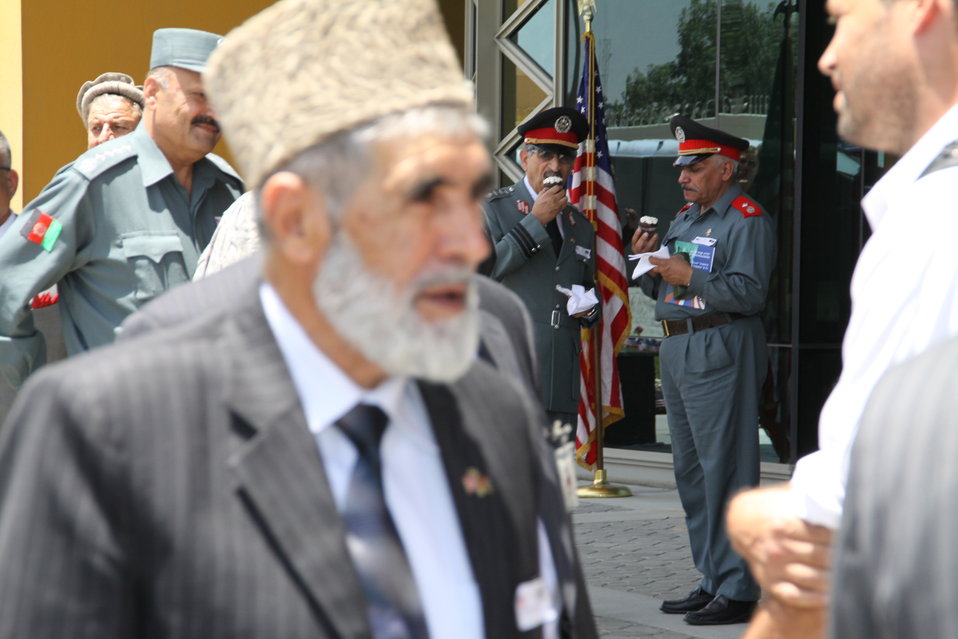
Kabul Official July 4th Celebration